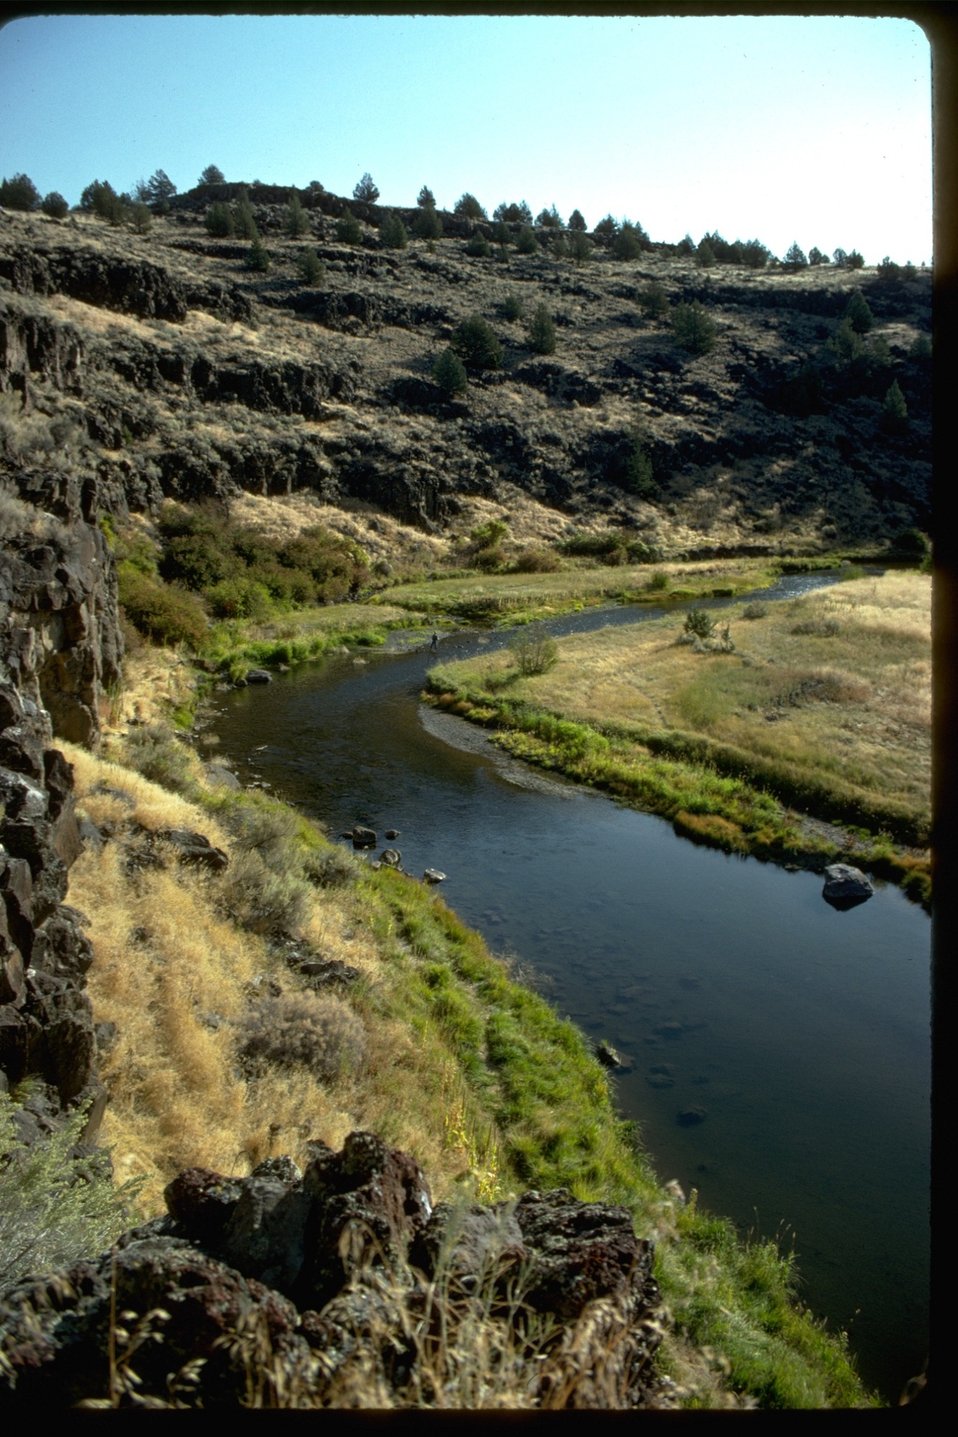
View up the Donner und Blitzen wild and scenic river near Page Springs Campground.